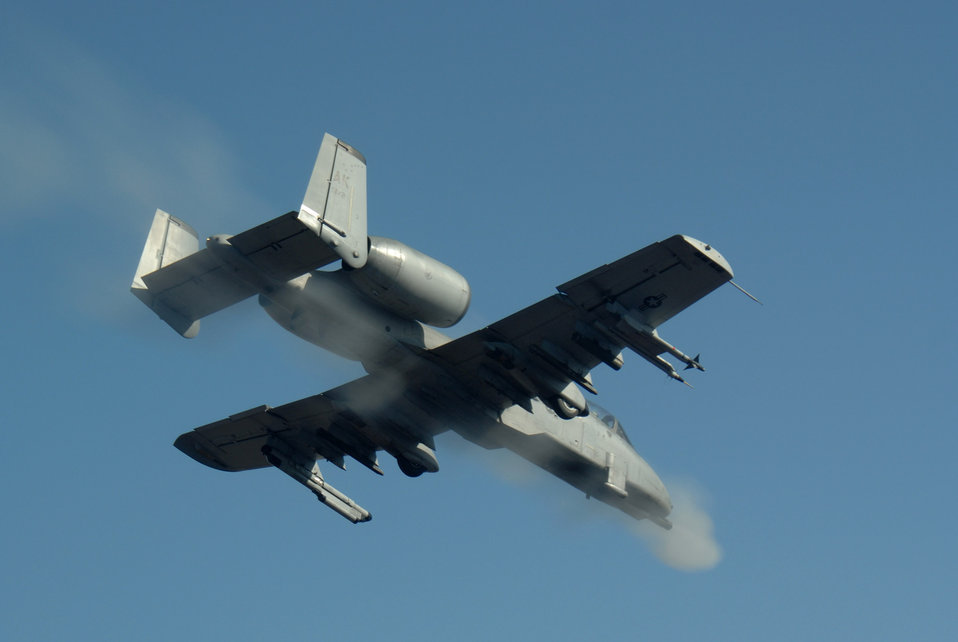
Sept. 16 airpower summary: A-10s perform shows of force

An A-10 Thunderbolt II, like this one, flies combat mission over Afghanistan supporting Operation Enduring Freedom. A-10s provide close-air support and employ a wide variety of conventional munitions, including general purpose bombs.